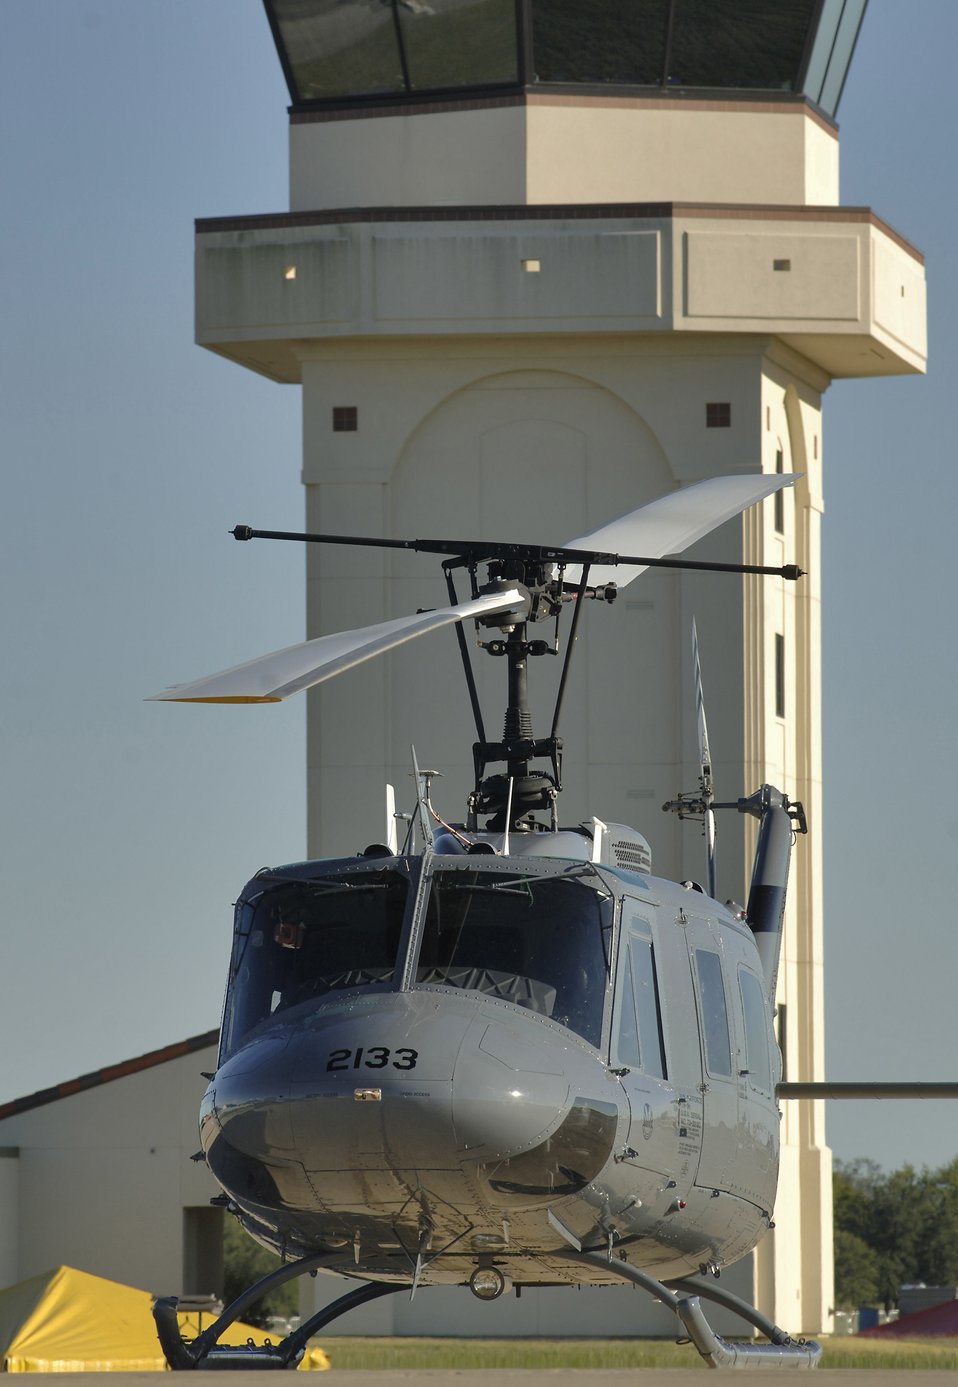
New Huey

RANDOLPH AIR FORCE BASE, Texas -- TH-1H is the latest aircraft to join the Air Force inventory. It will serve as the undergraduate pilot training platform. Some major exterior differences from its predecessors are an enlarged nose, wider main rotor blades and the tail rotor is now on the starboard side for better performance. Inside it has undergone an extensive refurbishment including upgraded components and a new avionics suite with a glass cockpit. Current plans call for 24 of these former Army UH-1H helicopters to be upgraded.